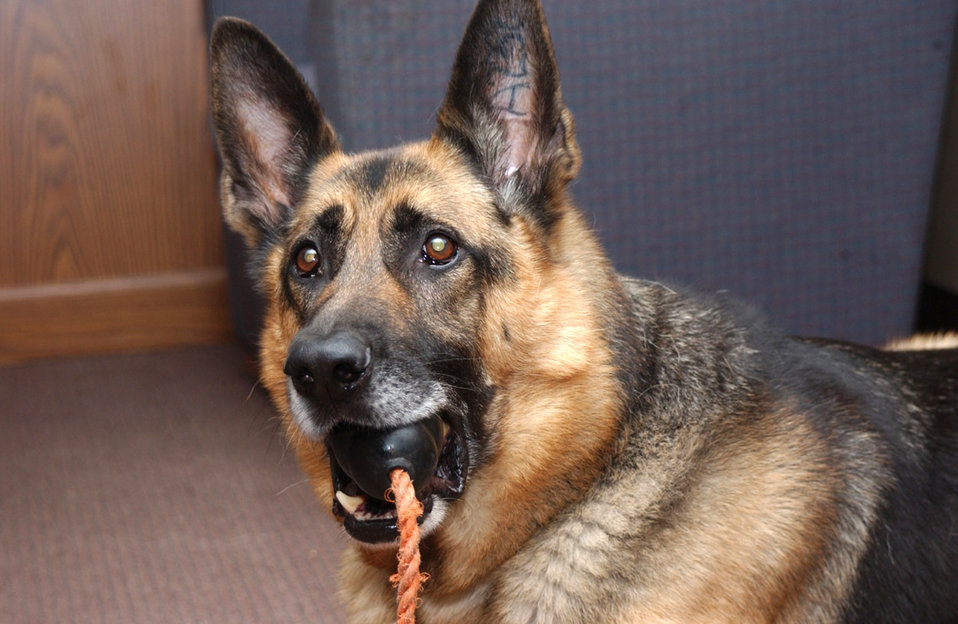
Dog patrol

EIELSON AIR FORCE BASE, Alaska -- Rin Tin, a military working dog, pauses to chew on a toy during training Aug. 18. Military working dogs here provide anti-terrorism and security to the base as well as to deployed locations worldwide. Rin Tin's day usually begins at 4 a.m. with feeding and a seven-point checkup by his handler. Then comes grooming, a rub down, obedience training and a run through the confidence course before beginning the day on patrol. Rin Tin is a 7-year-old 98-pound German shepherd assigned to the 354th Security Forces Squadron.